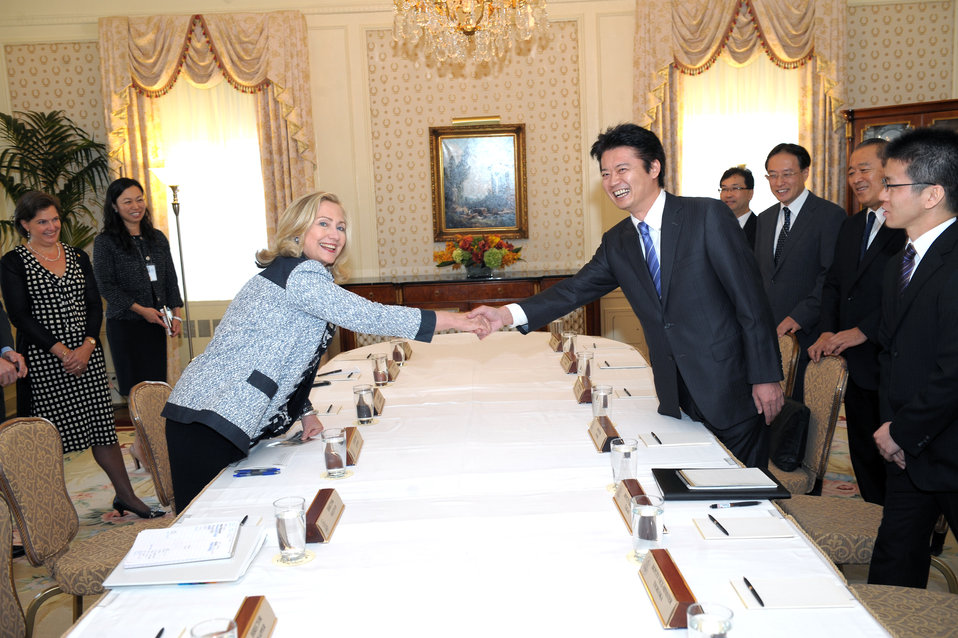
Secretary Clinton Meets With Japanese Foreign Minister Gemba

U.S. Secretary of State Hillary Rodham Clinton holds a bilateral meeting with Japanese Foreign Minister Gemba, in New York, New York, on September 19, 2011.